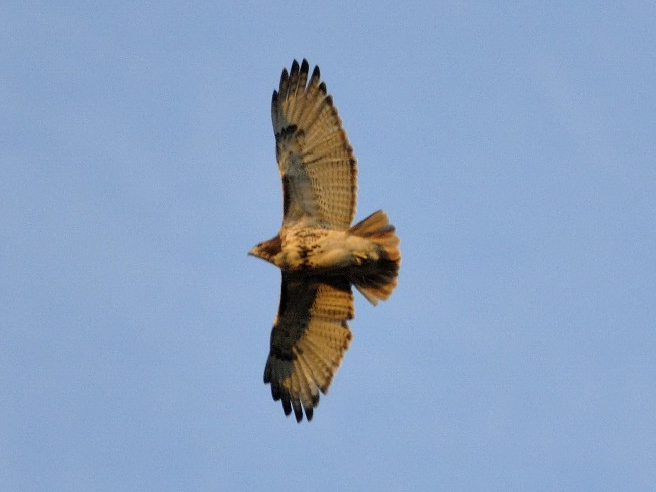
Photo of the Week - Red-tailed Hawk (MA)

Photo of the Week - 11/26/12

Adult Red-tailed hawk photographed at the USFWS Northeast Regional Office.